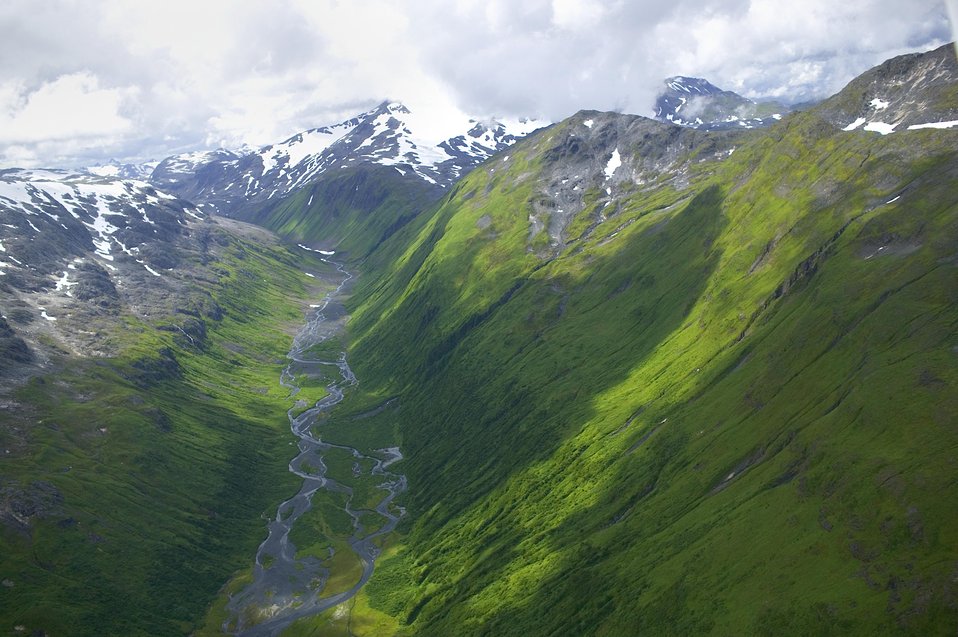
KOD Hildebrand (8)

Kodiak National Wildlife Refuge- Wildlife